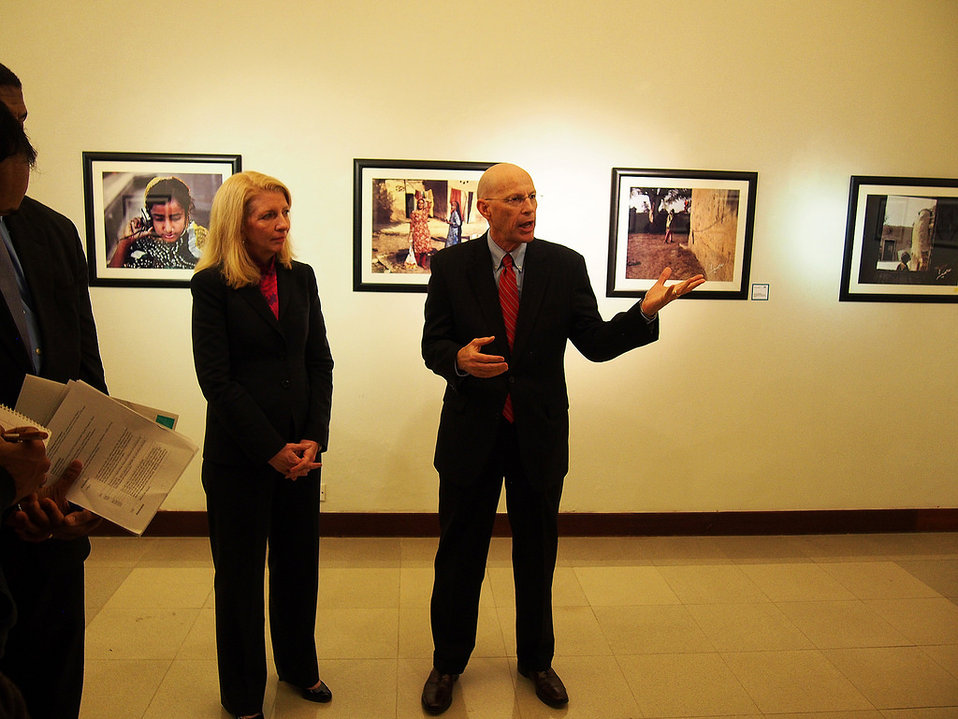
Catherine Russell, U.S. Ambassador-at-Large for Global Women’s Issues and USAID Pakistan Mission Director Gregory Gottleib attend a photographic exhibition featuring the work of acid attack survivors February 12, 2014 at Pakistan National Council of the Arts.

The event was sponsored by USAID and its partner, the Aurat Foundation, which implements the Gender Equity Program (GEP), a program focused on addressing women’s access to justice. The photographers are beneficiaries of the Acid Survivors Foundation (ASF), a GEP grantee.